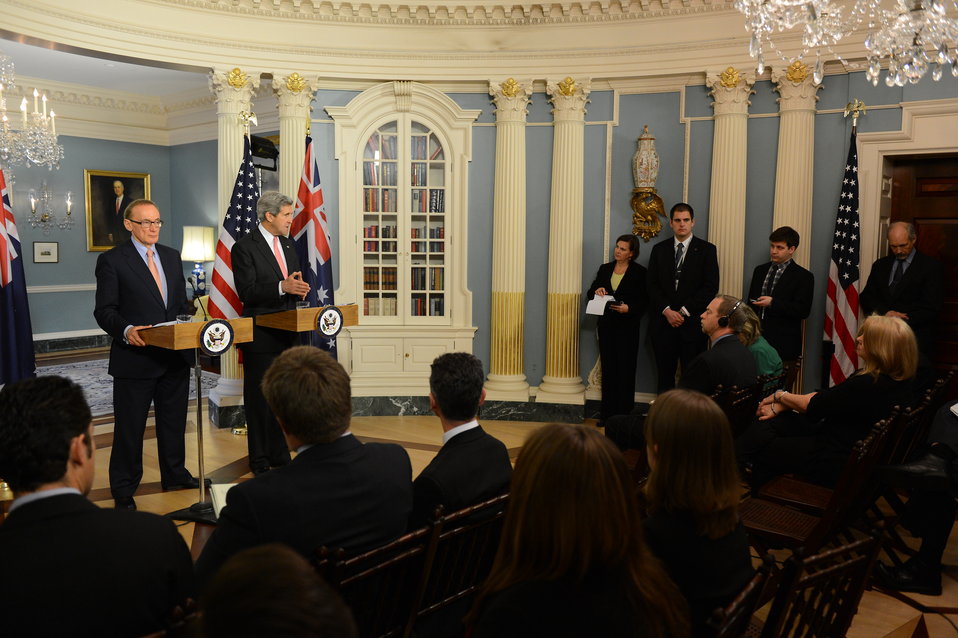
Secretary Kerry and Australian Foreign Minister Carr Address Reporters

U.S. Secretary of State John Kerry and Australian Foreign Minister Bob Carr address reporters after their bilateral meeting at the U.S. Department of State in Washington, D.C., on March 18, 2013.